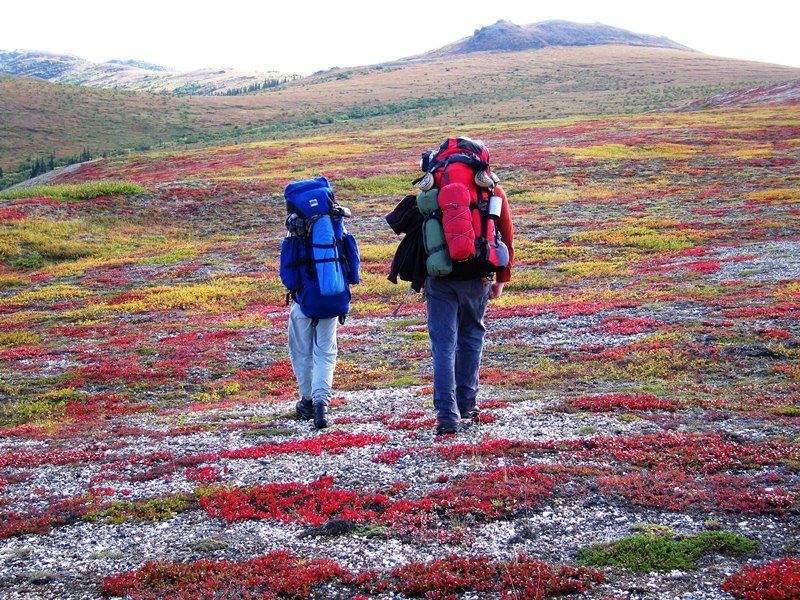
Selawik Refuge

Hikers at Selawik National Wildlife Refuge, AK.